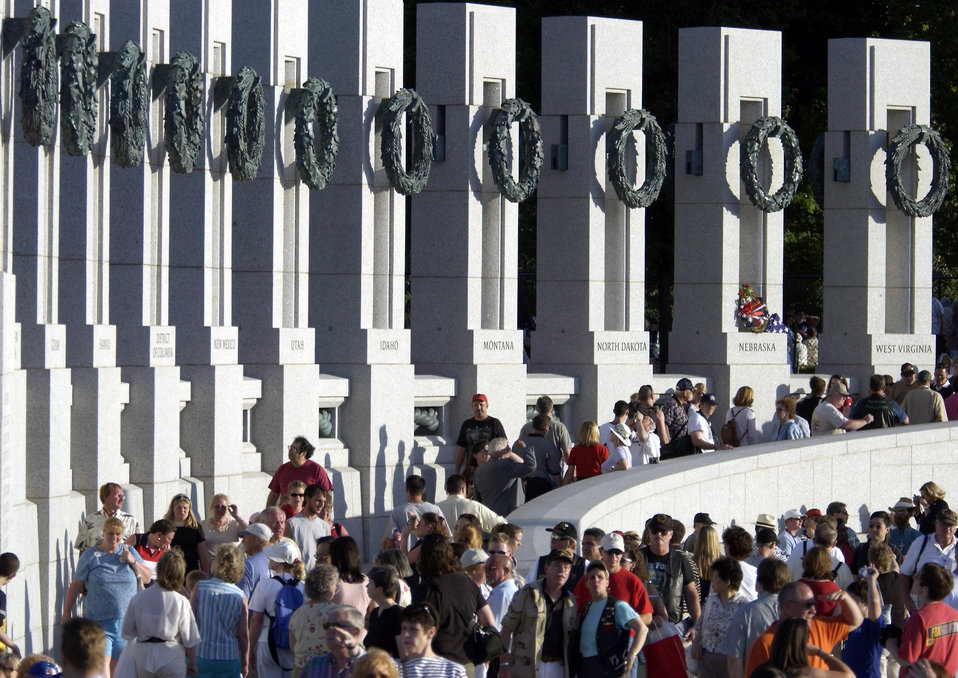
National World War II Memorial dedicated

WASHINGTON -- The largest gathering of World War II veterans since 1945 assembled on the National Mall to witness the dedication of their long-awaited memorial May 29. More than 100,000 people were on hand as President Bush officially accepted the National World War II Memorial on behalf of a grateful nation. The 7.4-acre granite and bronze tribute took 17 years to complete.